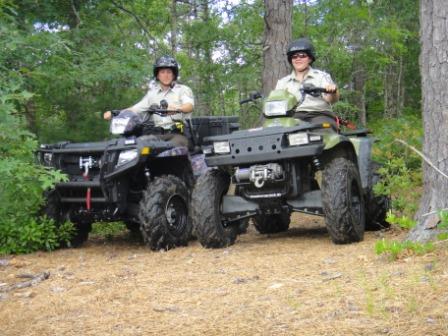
Law Enforcement SCEP

A law enforcement SCEP at the Eastern Massachusetts National Wildlife Refuge Complex.